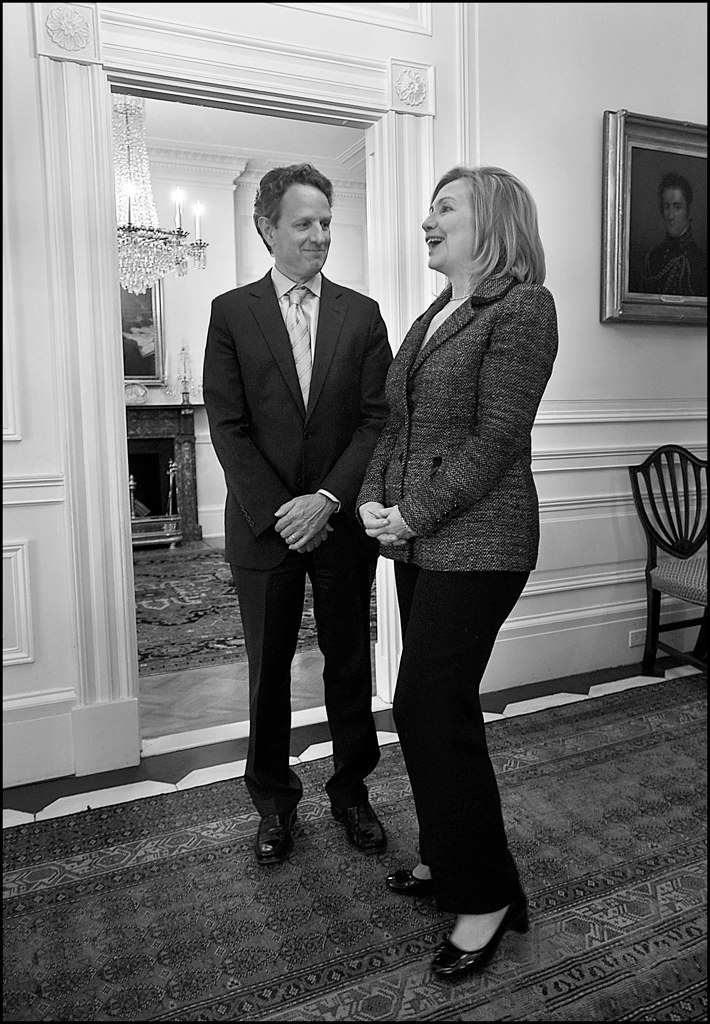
U.S.-China Strategic and Economic Dialogue

Treasury Secretary Tim Geithner and Secretary of State Hillary Clinton chat before a working dinner at the Blair House, the evening before the start of the third meeting of the Strategic and Economic Dialogue.